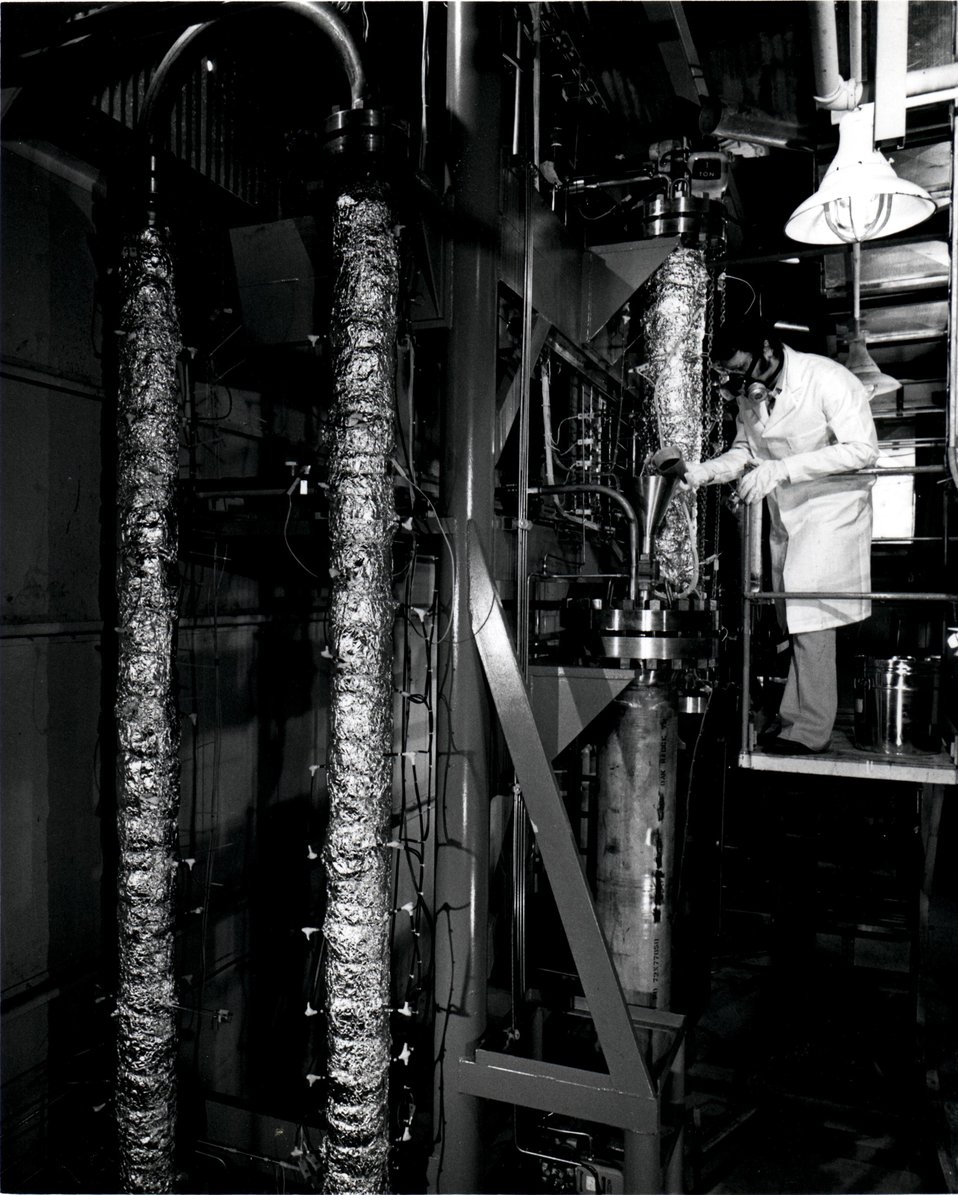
ERDA News, Vol. 1, #15.